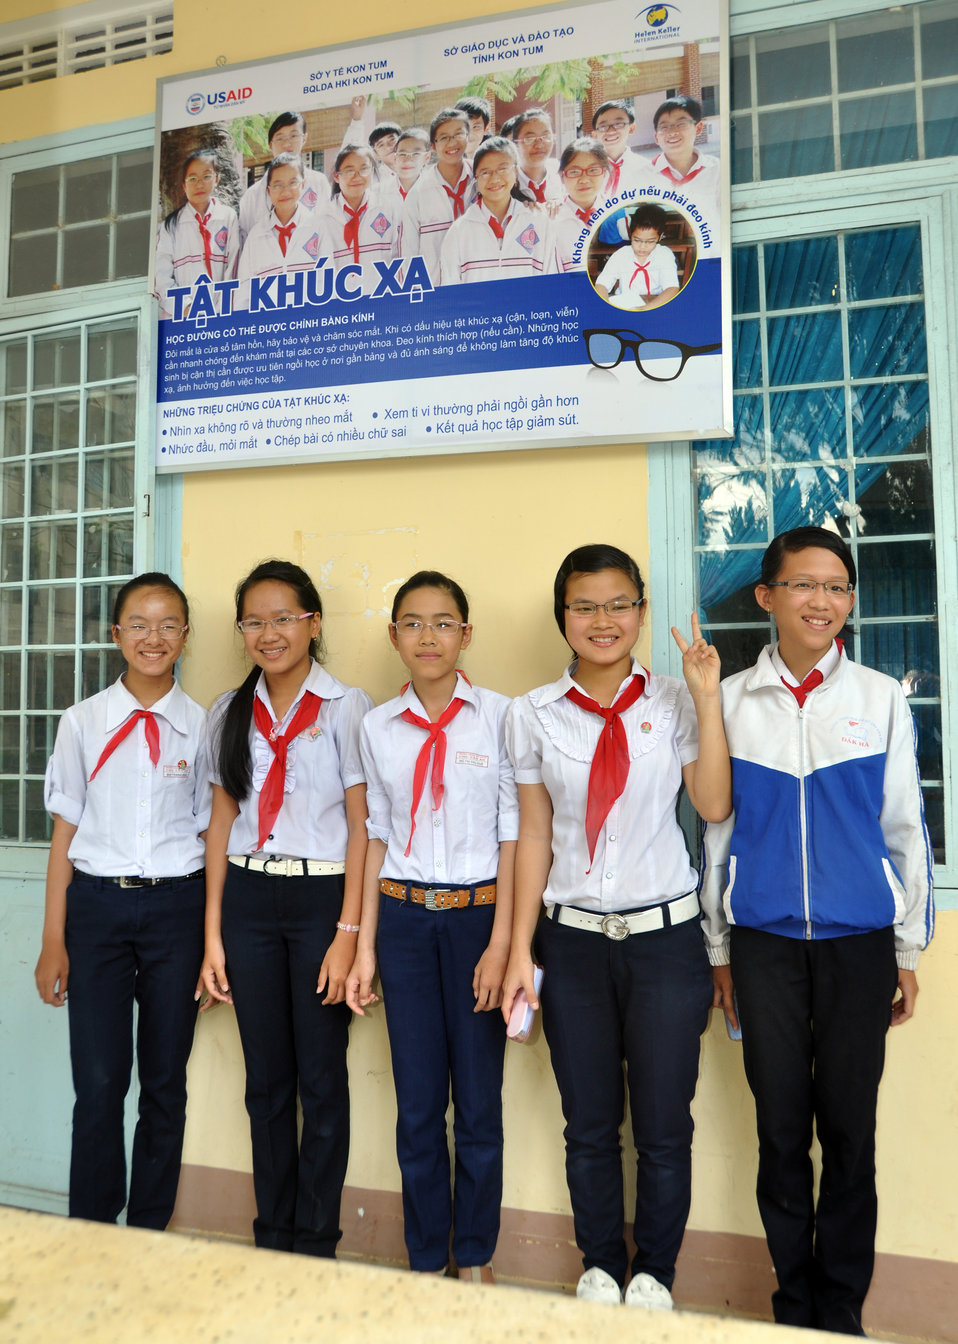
USAID and partners support eyecare, glasses, in Kon Tum

Eyeglasses examination at Luong The Vinh School, Kon Tum Province